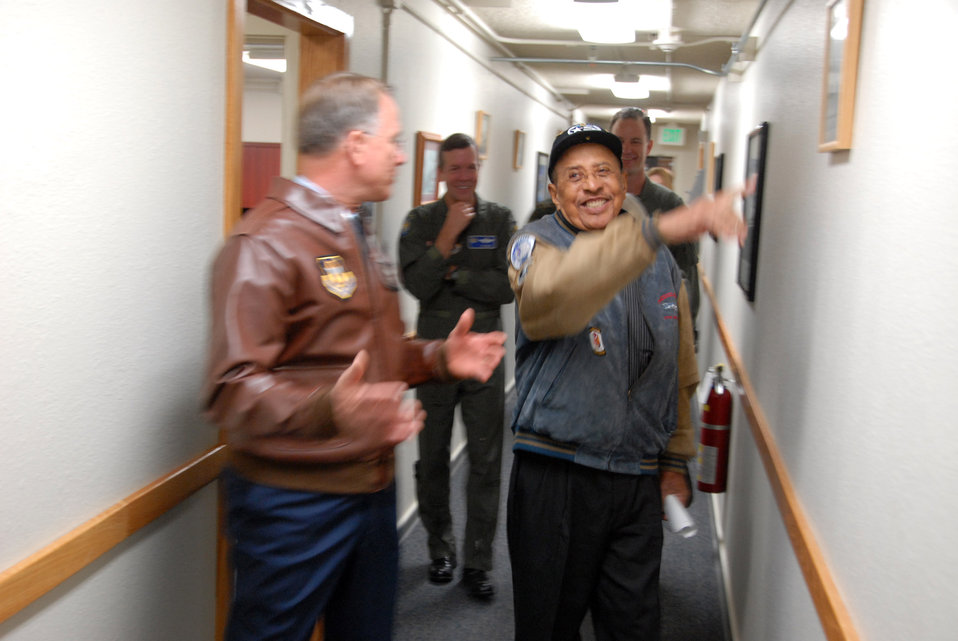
Air Force Reserve stands up first F-22 Raptor unit

Retired Lt. Col. James Warren takes a walk down memory lane with Lt. Gen. John A. Bradley, remeniscing over historical photos that line the walls of the new 477th Fighter Group Headquarters at Elemendorf Air Force Base, Alaska. The newly designated unit is tied historically to the Tuskegee Airmen. Colonel Warren, an original Tuskegee Airmen, describes in great detail each photo and the hardships they endured. General Bradley is the chief of the Air Force Reserve Command.